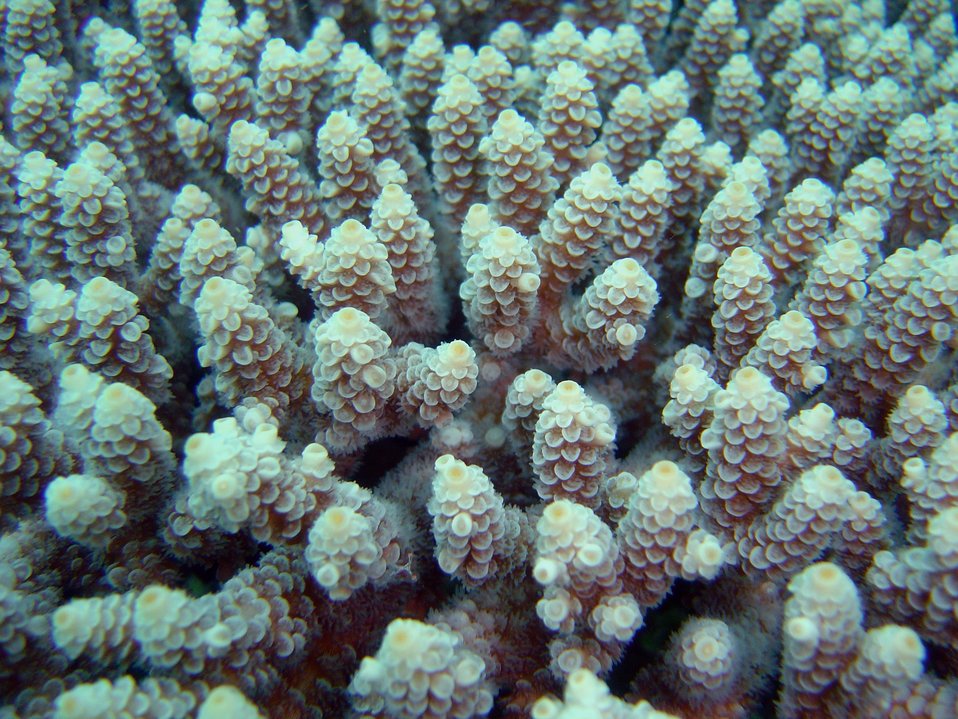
Acropora coral close-up on the Hoya Maru.